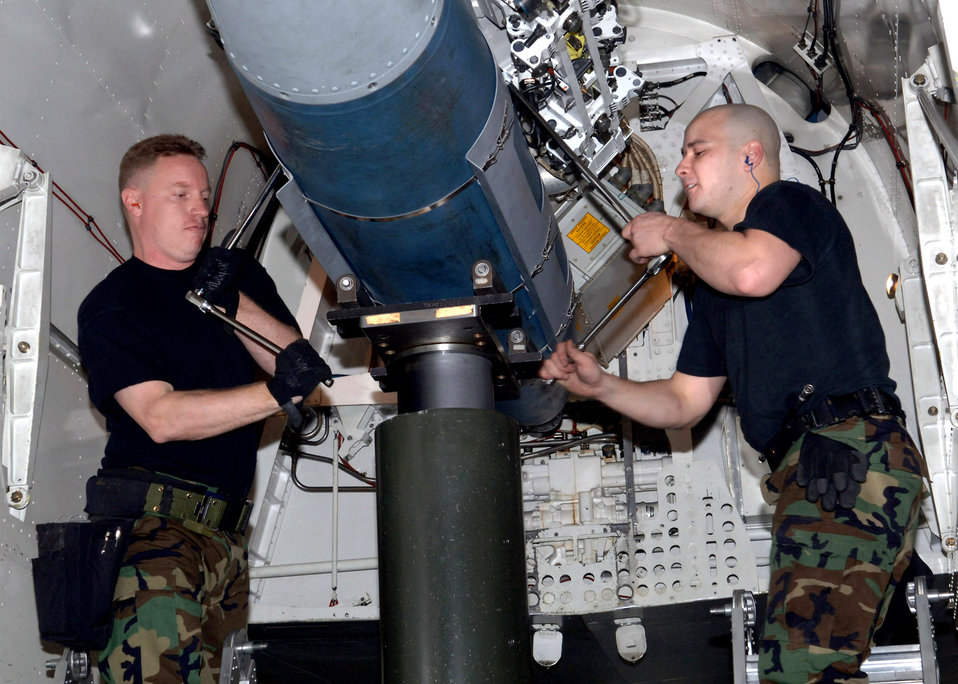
Weapons Load Crew Competition

Staff Sgt. Jason Murphy and Senior Airman Andrew Littleton load weapons during a crew competition at Ellsworth Air Force Base, S.D., on Friday, April 7, 2006. Each crew is rated on their time and efficiency when loading bombs onto the armament systems trainer. Both are aircraft armament systems specialists with the 34th Aircraft Maintenance Unit.